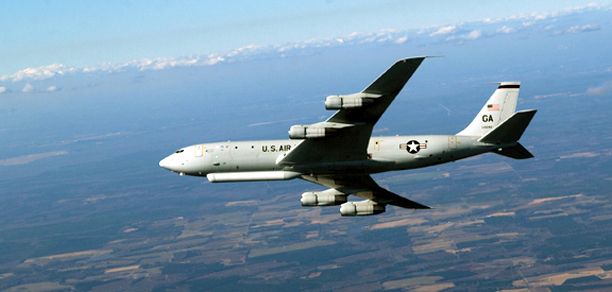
JSTARS

FILE PHOTO -- The E-8C Joint Surveillance Target Attack Radar System is a joint Air Force - Army program. The Joint STARS uses a multi-mode side looking radar to detect, track, and classify moving ground vehicles in all conditions deep behind enemy lines. The aircraft is the only airborne platform in operation that can maintain realtime surveillance over a corps-sized area of the battlefield.